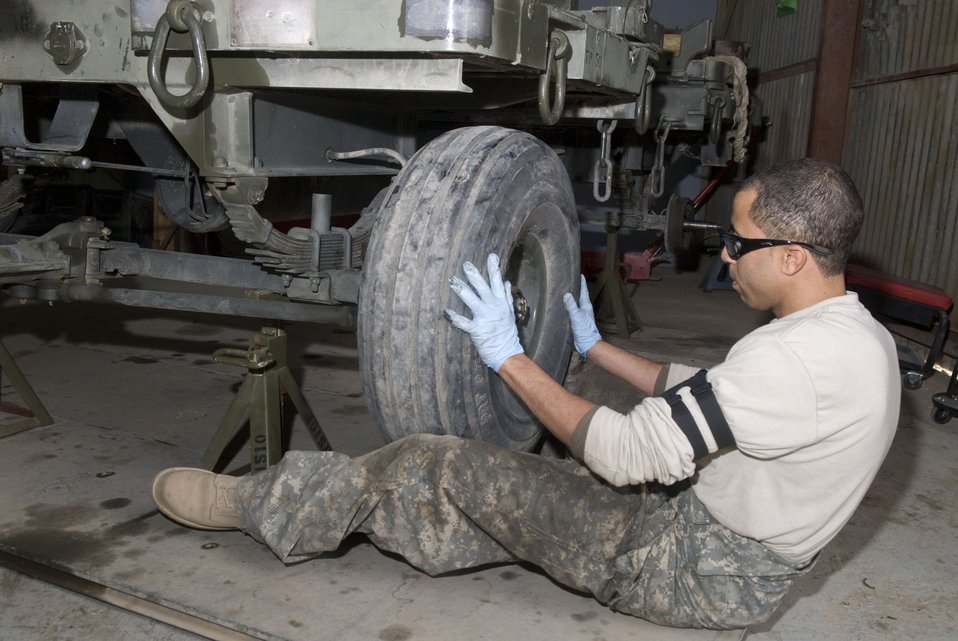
Munitions don't fly without these guys

Staff Sgt. Elvin Rose places a tire back onto a munitions trailer after reassembling the wheel drum during a 720-day inspection Dec. 19 at Balad Air Base, Iraq. The trailers receive inspections every 90, 180, 365 and 720 days to ensure they are serviceable. Sergeant Rose is a 332nd Expeditionary Maintenance Squadron munitions equipment maintainer and is deployed from Spangdahlem Air Base, Germany.